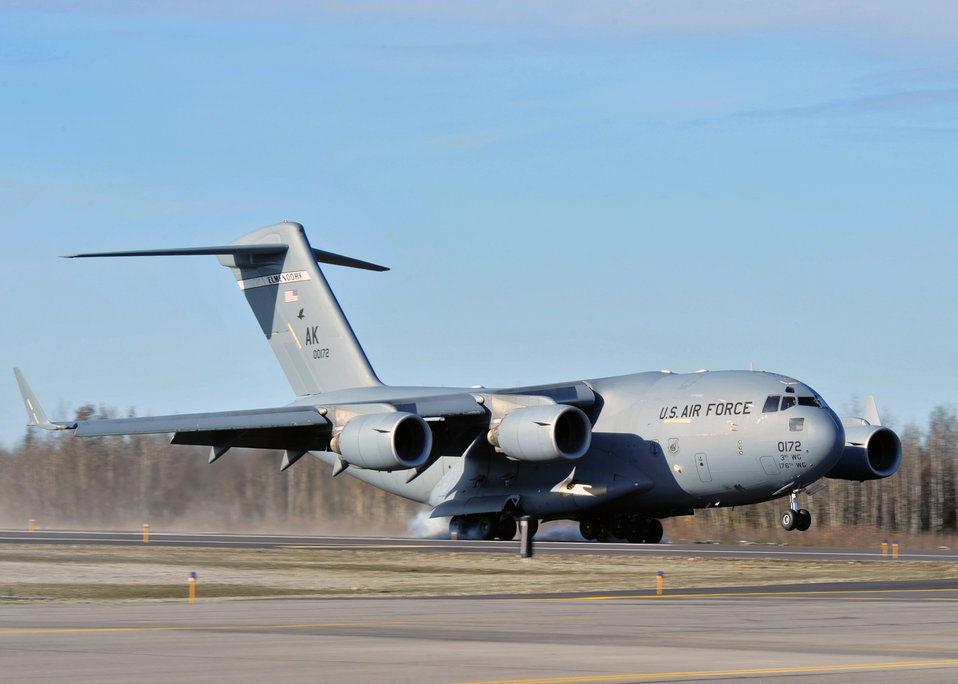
Allen Army Airfield to save Air Force money, provide tactical training

A C-17 Globemaster III from the 517th Airlift Squadron does an assault landing on a new runway Sept. 29, 2009, at Allen Army Airfield, Alaska.